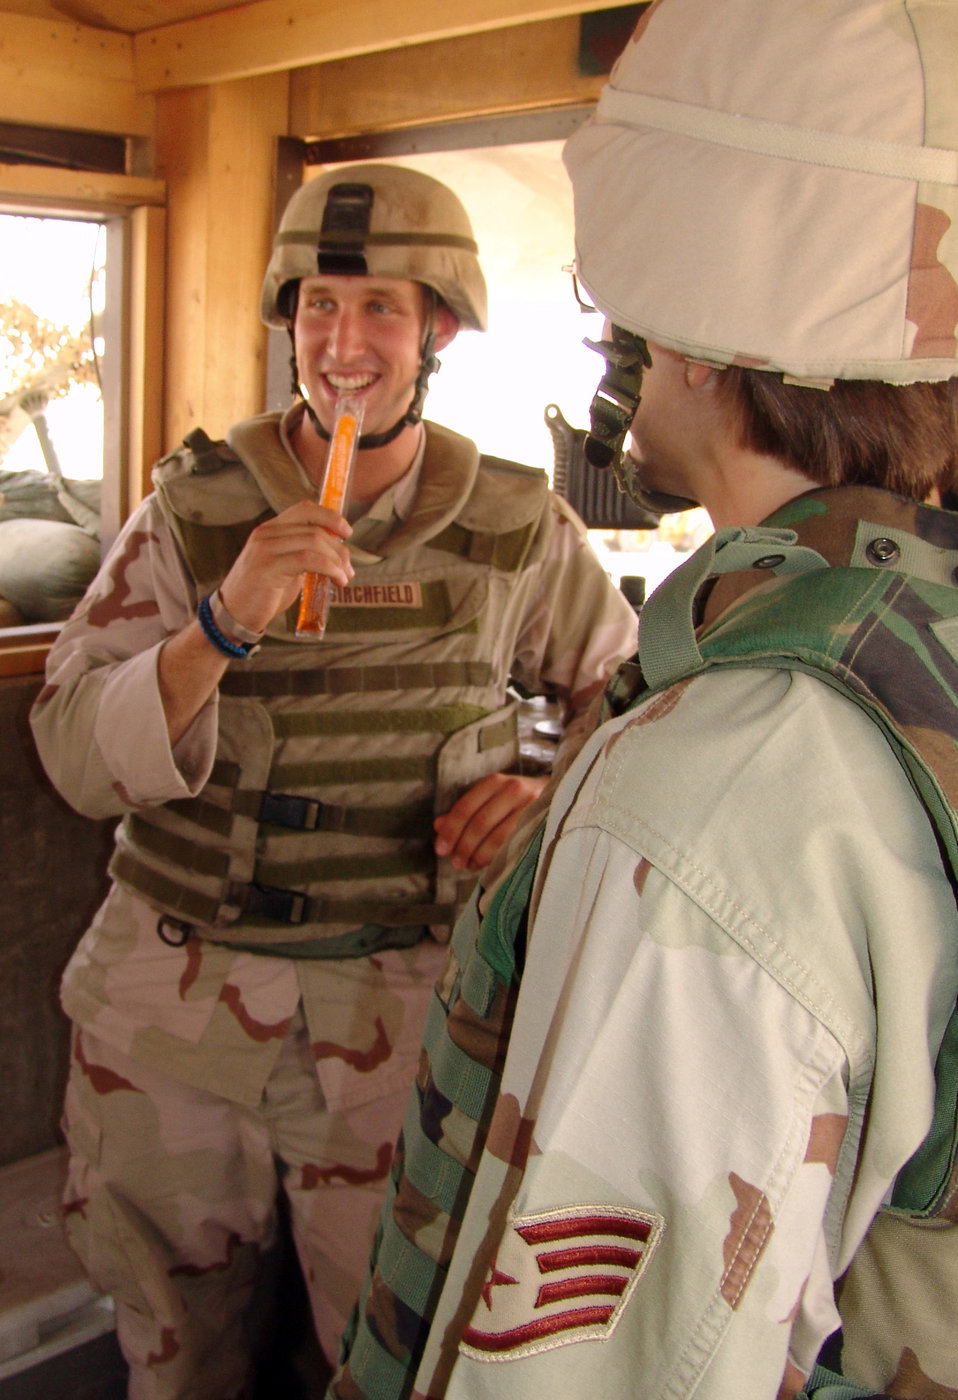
Security forces Airmen get frozen treat from Midwest

KIRKUK AIR BASE, Iraq -- Airman 1st Class Jeremy Birchfield enjoys a freezer pop given by Staff Sgt. Bobbi Russell on behalf of a noncommissioned officer organization here, which distributed more than 800 freezer pops to security forces Airmen. Airman Birchfield is assigned to the 506th Expeditionary Security Forces Squadron, and Sergeant Russell is with the 506th Expeditionary Services Squadron.